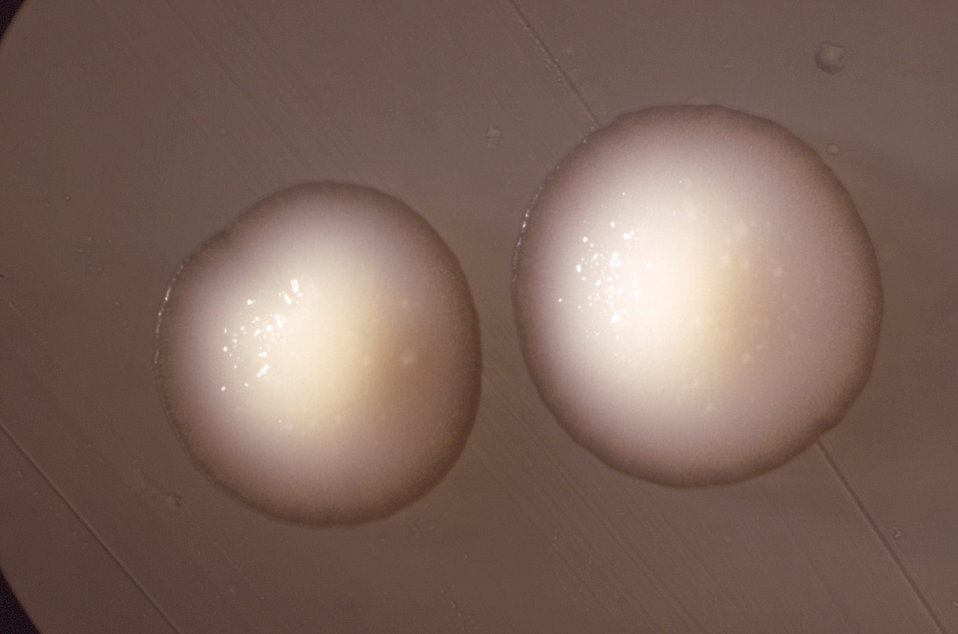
Magnified 15X, this image depicts the morphologic characteristics displayed by two Gram-positive, Actinomyces naeslundi bacterial colonies, of the 'smooth' strain, W-1003, which were cultivated on an unknown culture medium.